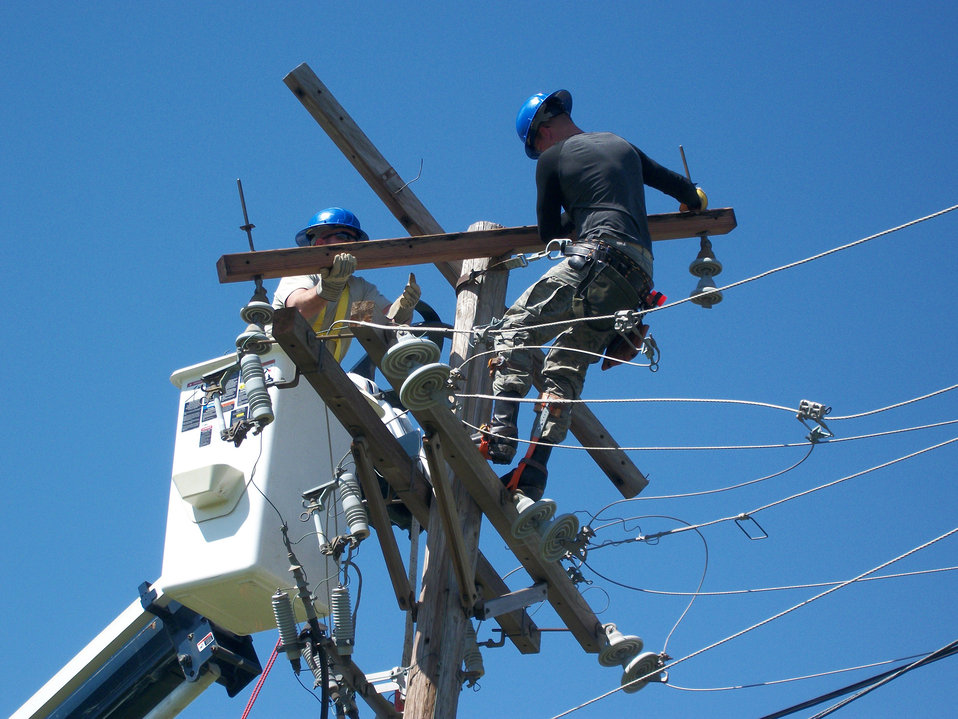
Let there be light

Tech Sgt. Phillip Wilson (left) and Staff Sgt. Austin Hollingshead repair a power pole April 29; 2011; at Little Rock Air Force Base; Ark.; after a tornado struck the base April 25. Both NCOs are assigned to the 375th Civil Engineer Squadron at Scott Air Force Base; Ill.